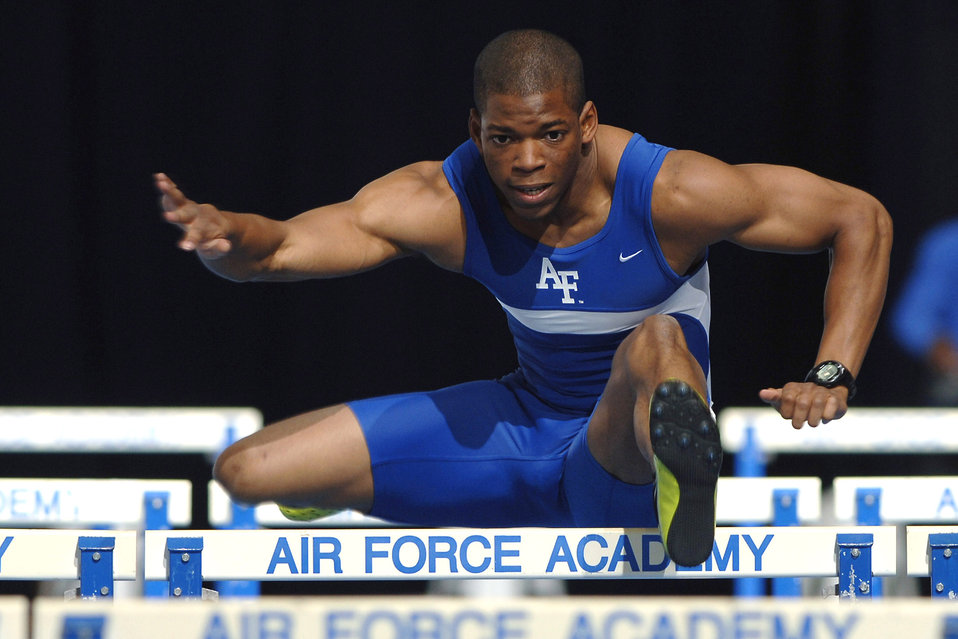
The time to beat

Air Force Academy junior Kellen Curry paced the field of the 60-meter men's hurdles with a winning time of 8.09 seconds at the Air Force All-Comers Meet Jan. 13 at Colorado Springs, Colo. The Air Force track and field team officially opened the season by hosting the annual competition.